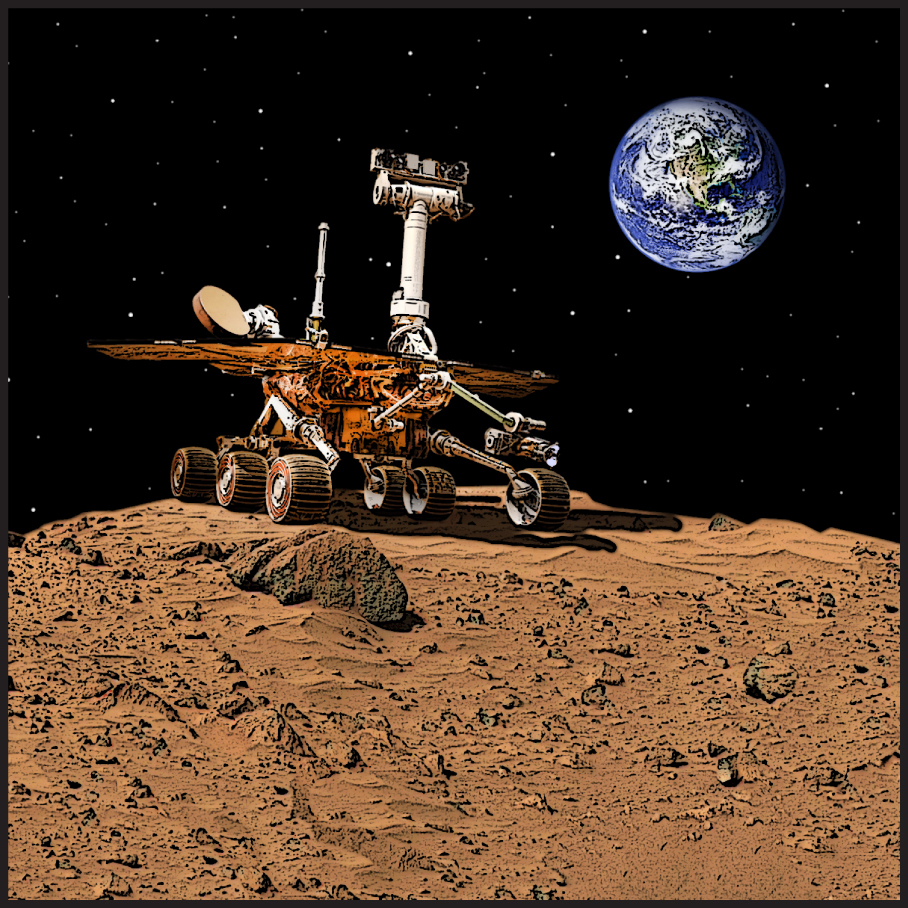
IDAHO NATIONAL LABORATORY ASSEMBLED AND TESTED THE POWER SOURCE ON THE MARS CURIOSITY ROVER AND CONDUCTS DESIGN WORK ON OTHER SPACE EXPLORATION SYSTEMS INVOLVING NUCLEAR ENERGY.